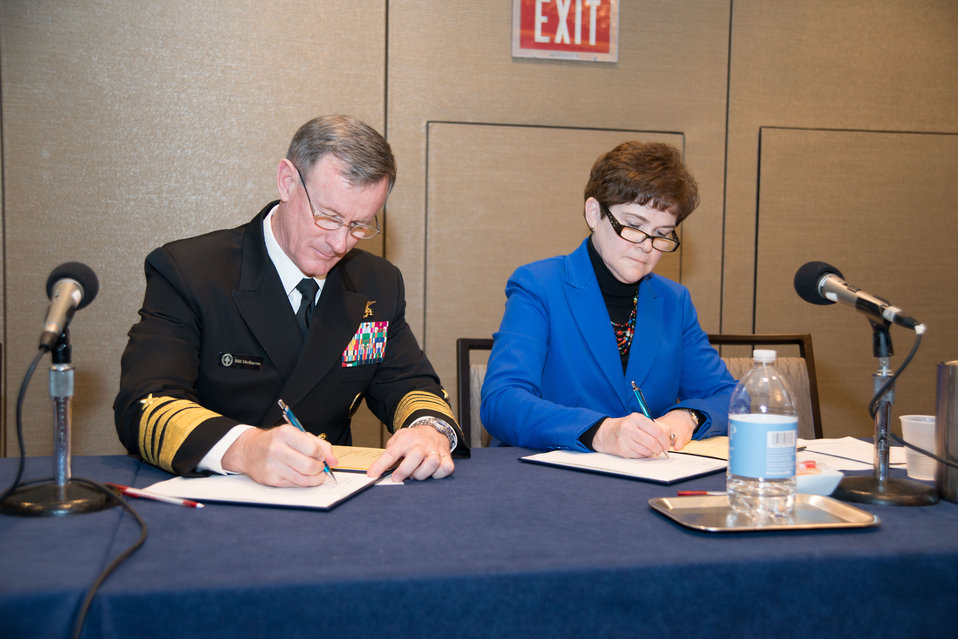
Admiral William H. McRaven, USN, and Agriculture Deputy Secretary Krysta Harden sign a Memorandum of Understanding (MOU) between the U.S. Department of Agriculture (USDA) and U.S. Special Operations Command (USSOCOM) to increase support services for military families at the 2014 Agricultural Outlook Forum on Friday, Feb. 21, 2014 in Arlington, VA. The MOU allows the USDA supported Cooperative Extension System and Land Grant Universities to work directly with USSOCOM to conduct research and develop programs for military families of Special Operations Units on issues such as personal financial management, health and nutrition, child care and youth empowerment. USDA’s annual Agricultural Outlook Forum brings together the agricultural community to discuss policy, trade, science, rural development, and the economic outlook for the coming year. The Forum also focuses on forestry, health and nutrition issues, and the changing dynamics and face of rural America.